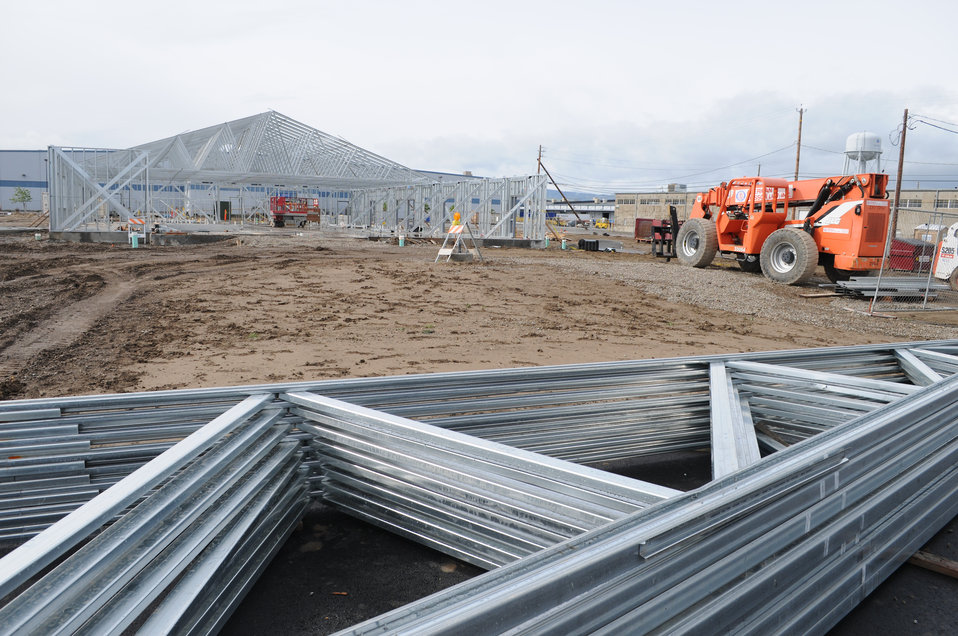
A view of ongoing construction of the Corps-built, Tracy Army Depot’s $3.7 million child development center March 23. Tracy Army Depot is one of three sites that make up the Defense Distribution Depot San Joaquin.